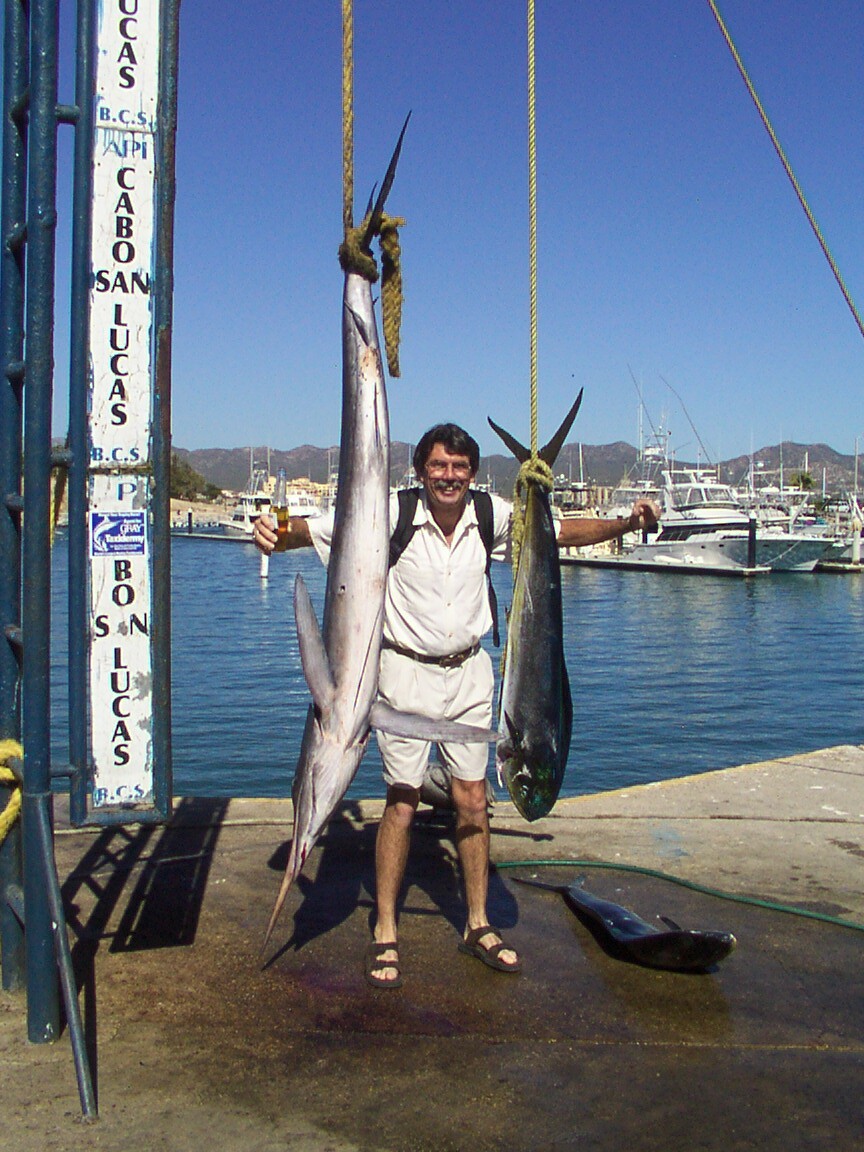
Vacation photo, Cabo San Lucas, Christmas 2003